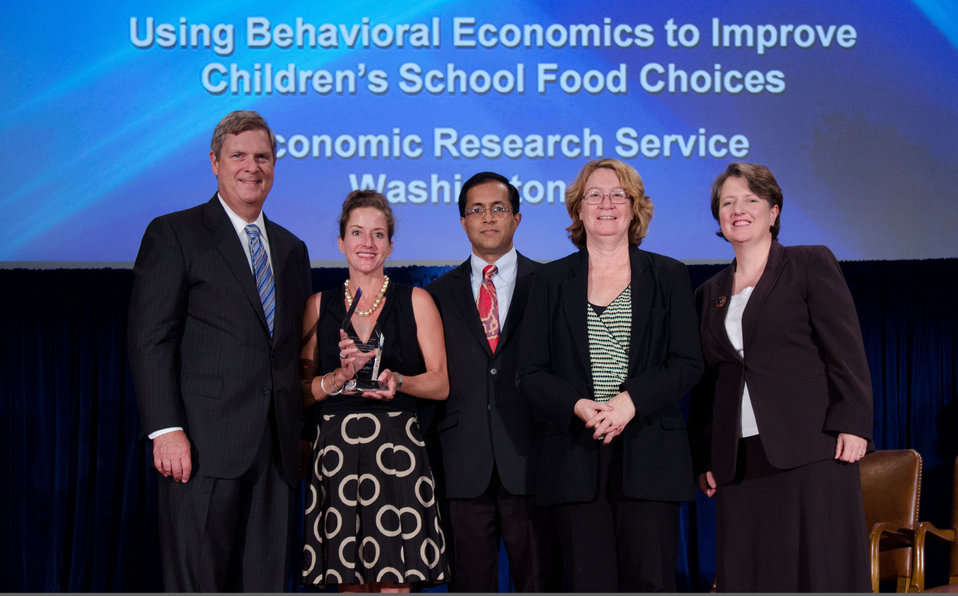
Agriculture Secretary Tom Vilsack (l) and Deputy Secretary Kathleen Merrigan (r), presents the
Ensuring That All Of America’s Children Have Access To Safe, Nutritious and Balanced Meals
Award to Using Behavioral Economics to Improve Children’s School Food Choice, Economic Research Service, Washington, DC. Joanne Guthrie, Jayachandran Variyam and Lisa Mancino, Group Leaders. For pioneering the use of methods derived from behavioral economics to develop a suit of products that help school food administrators and police makers build healthier school food environments across the country. On Wednesday, September 14, 2011 in the Jefferson Auditorium at the US Department of Agriculture in Washington, DC.